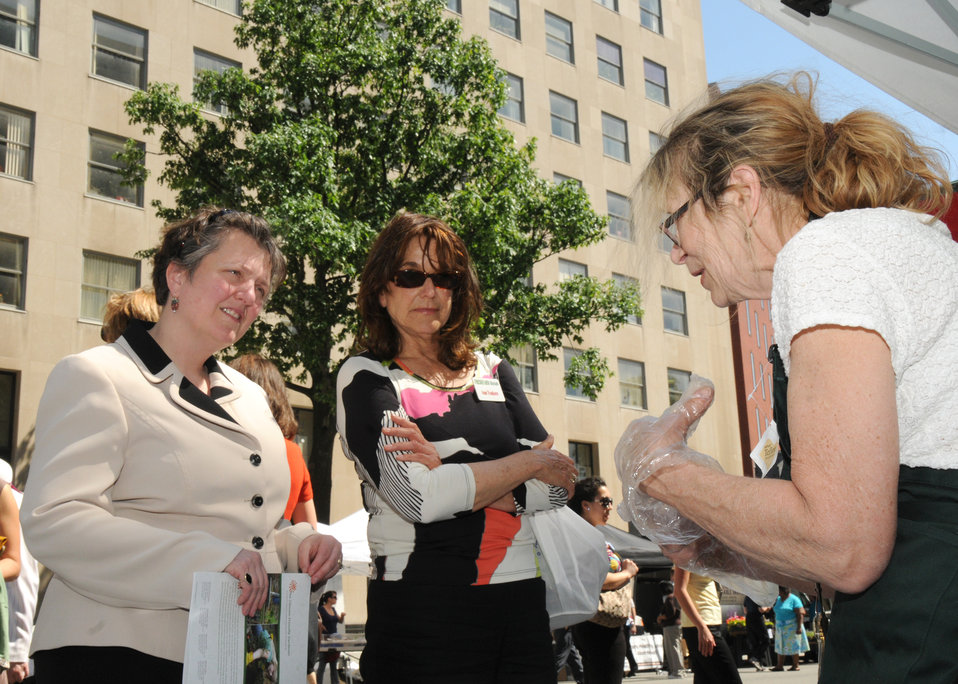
Agriculture Deputy Secretary Kathleen Merrigan wishes a vendor at the Freshfarm Market on Vermont Avenue in Washington D.C., by the White House good luck on her sales on Thursday, May 6, 2010. USDA photo 10di1348-128.